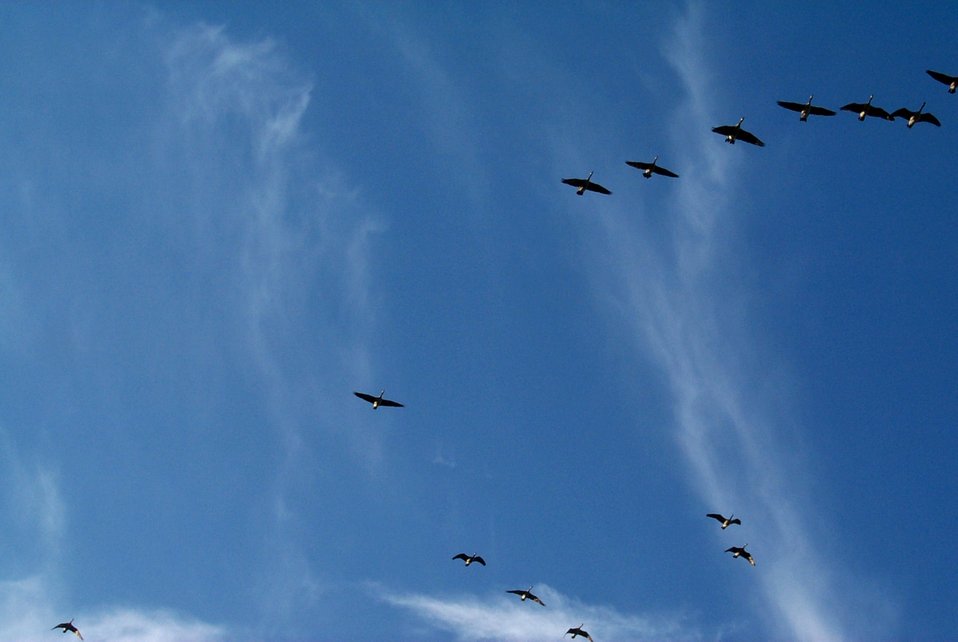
Geese along the Pacific flyway.